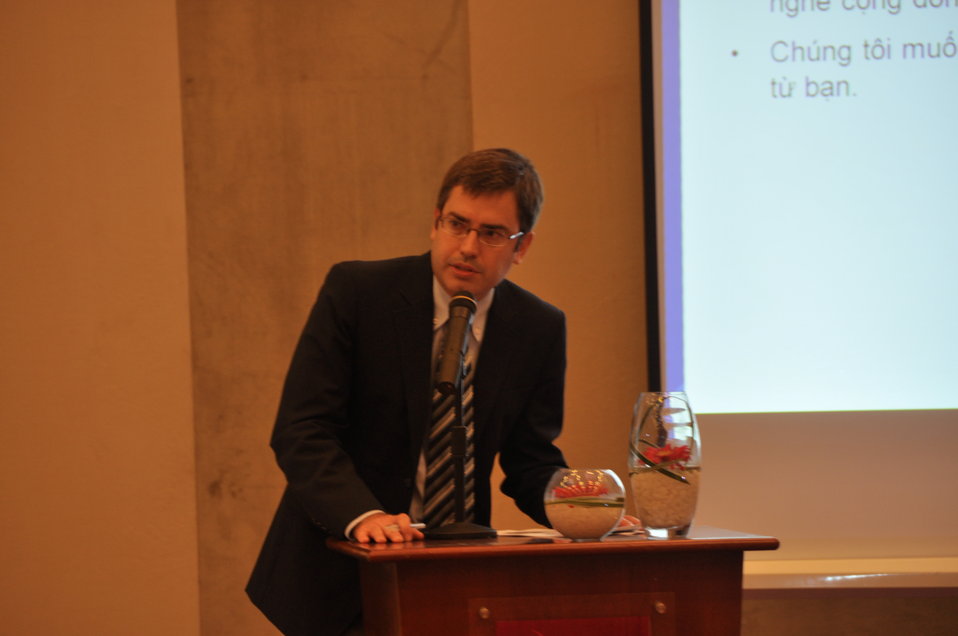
Jamey Watt of USAID Addresses the Danang Stakholder Meeting

Environmental Remediation of Dioxin Contamination at Danang Airport

Danang, Vietnam
January 23, 2013
Photos @USAIDVietnam